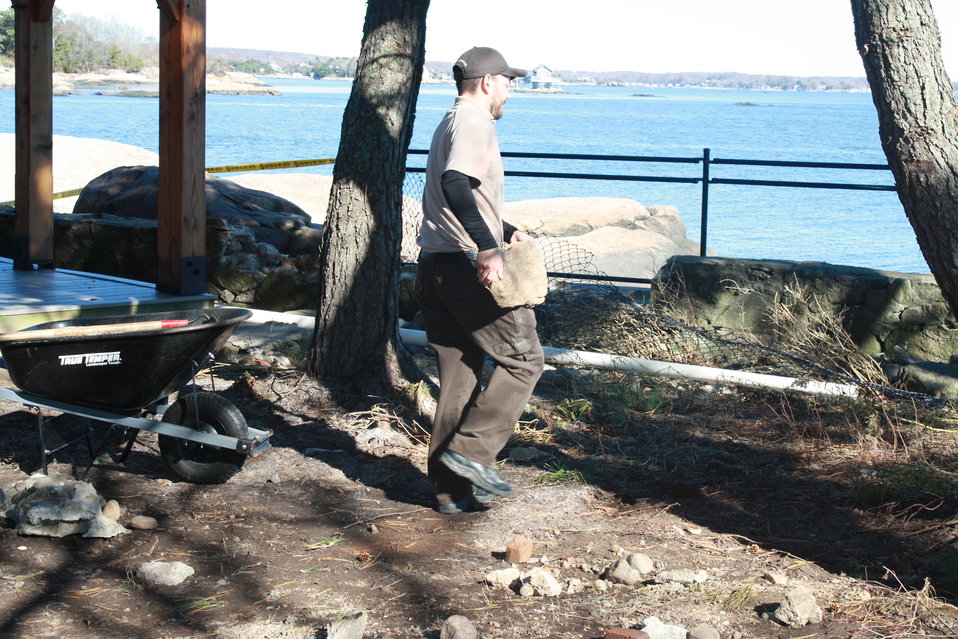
Beginning repairs at Stewart B. McKinney National Wildlife Refuge (CT)

Visitor Services Manager Shaun Roche works to clear rocks and debris on Outer Island after Hurricane Sandy.